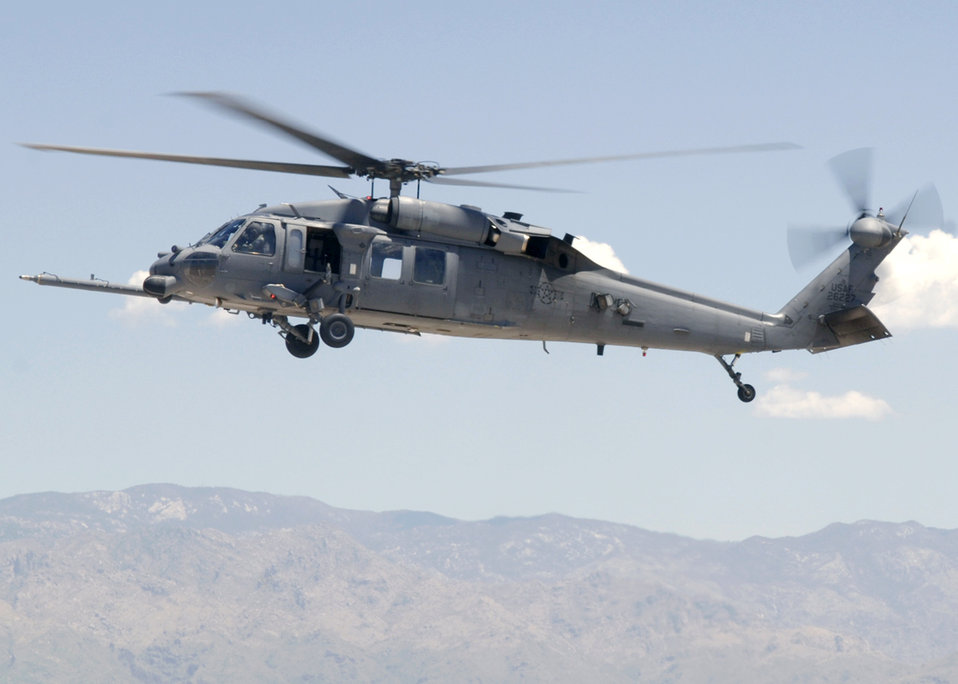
Pave Hawk testing

Maj. John Keeler hovers over the flightline in an HH-60 Pave Hawk at Davis-Monthan Air Force Base, Ariz., as he performs a test flight on July 10. Major Keeler participated in a real-world rescue of an individual from a cargo ship off the coast of California on July 1. He is assigned to the Air Force Reserve Command's 943rd Rescue Squadron.